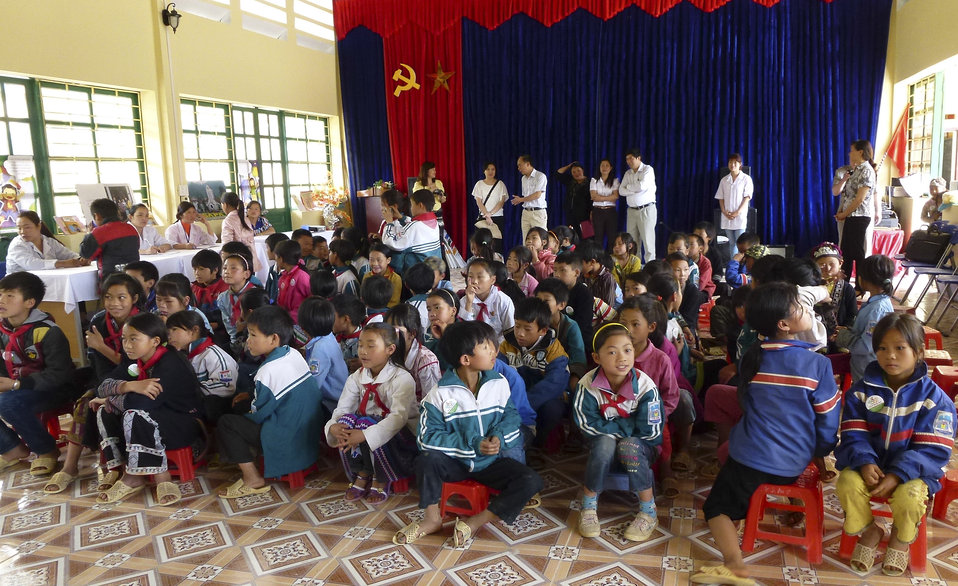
USAID supports deworming medication for school children in Sa Pa district of Lao Cai province

May 13, 2014.